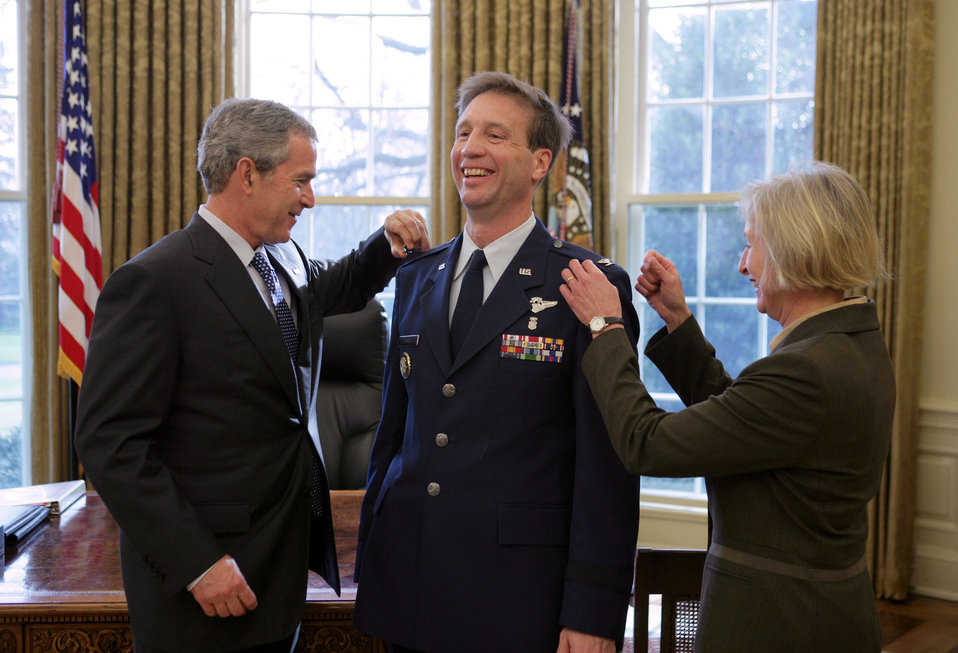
President's physician receives first star

WASHINGTON -- President Bush removes Brig. Gen. (Dr.) Richard J. Tubb's eagles during the doctor's promotion ceremony in the Oval Office here today. Dr. Tubb's wife, Kathy, also assisted with the ceremony. Dr. Tubb, a U.S. Air Force Academy graduate, is the president's physician. As the director of the medical unit, Dr. Tubb runs a staff of about 25 of the nearly 2,000 people assigned to the White House Military Office.